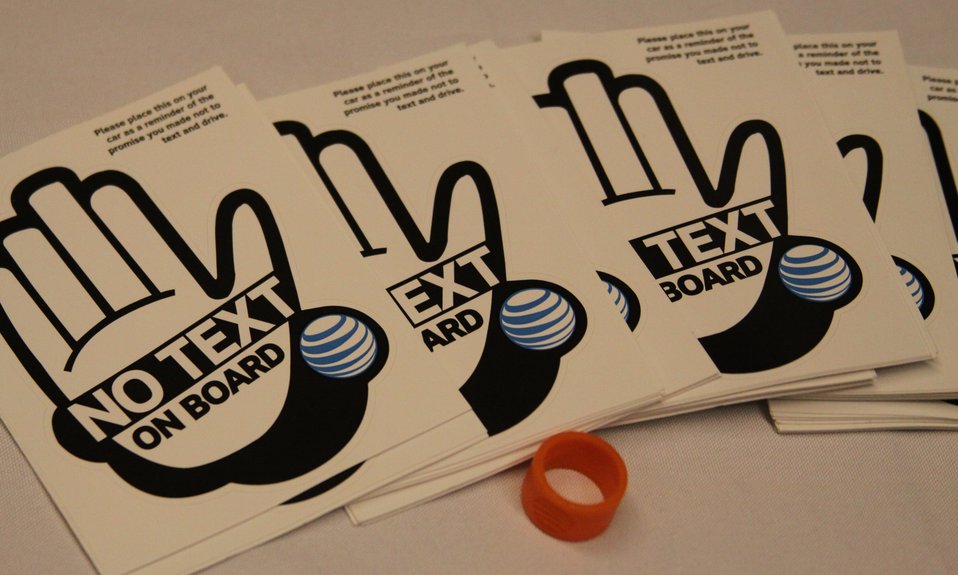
Distracted Driving Technology Showcase April 19, 2013